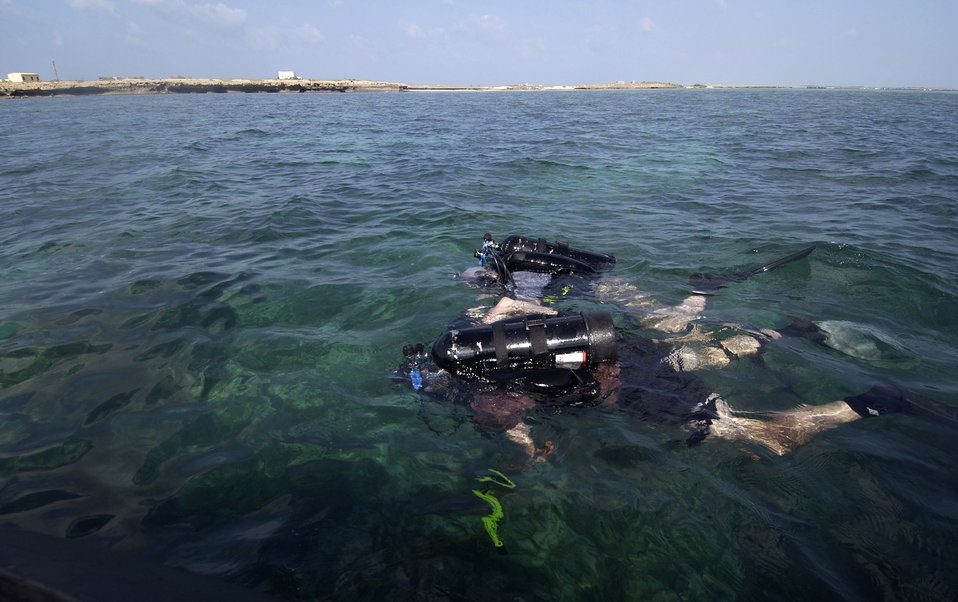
Operation Enduring Freedom

DJIBOUTI, Africa (AFPN) -- Air Force pararescuemen go through dive currency training off the coast here. The Airmen are reservists with the 304th Rescue Squadron at Portland International Airport, Ore.